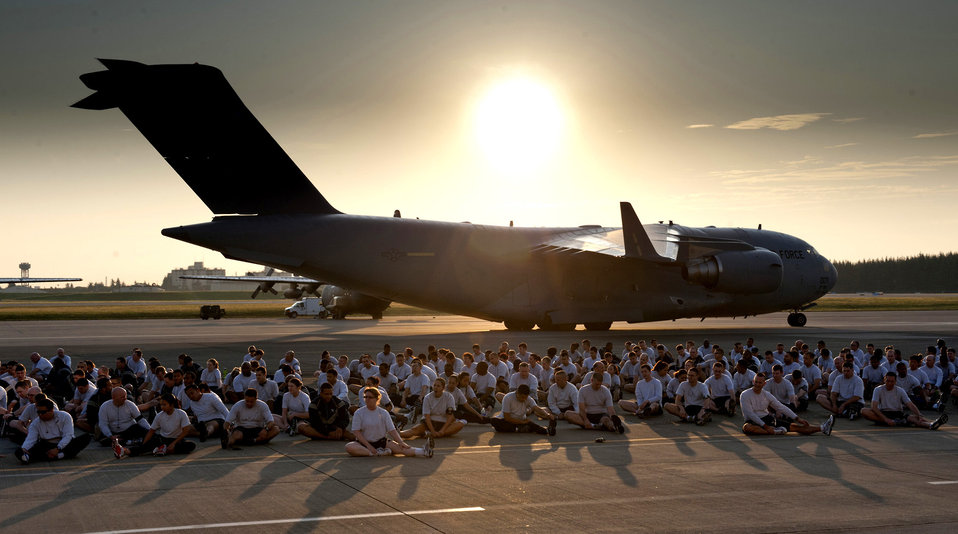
Yokota Airmen get fit, give back

YOKOTA AIR BASE, Japan -- A C-17 Globemaster III cargo jet taxis by as Airmen from the 374th Airlift Wing stretch for the wing run at Yokota Air Base, Japan, Oct. 7, 2011.